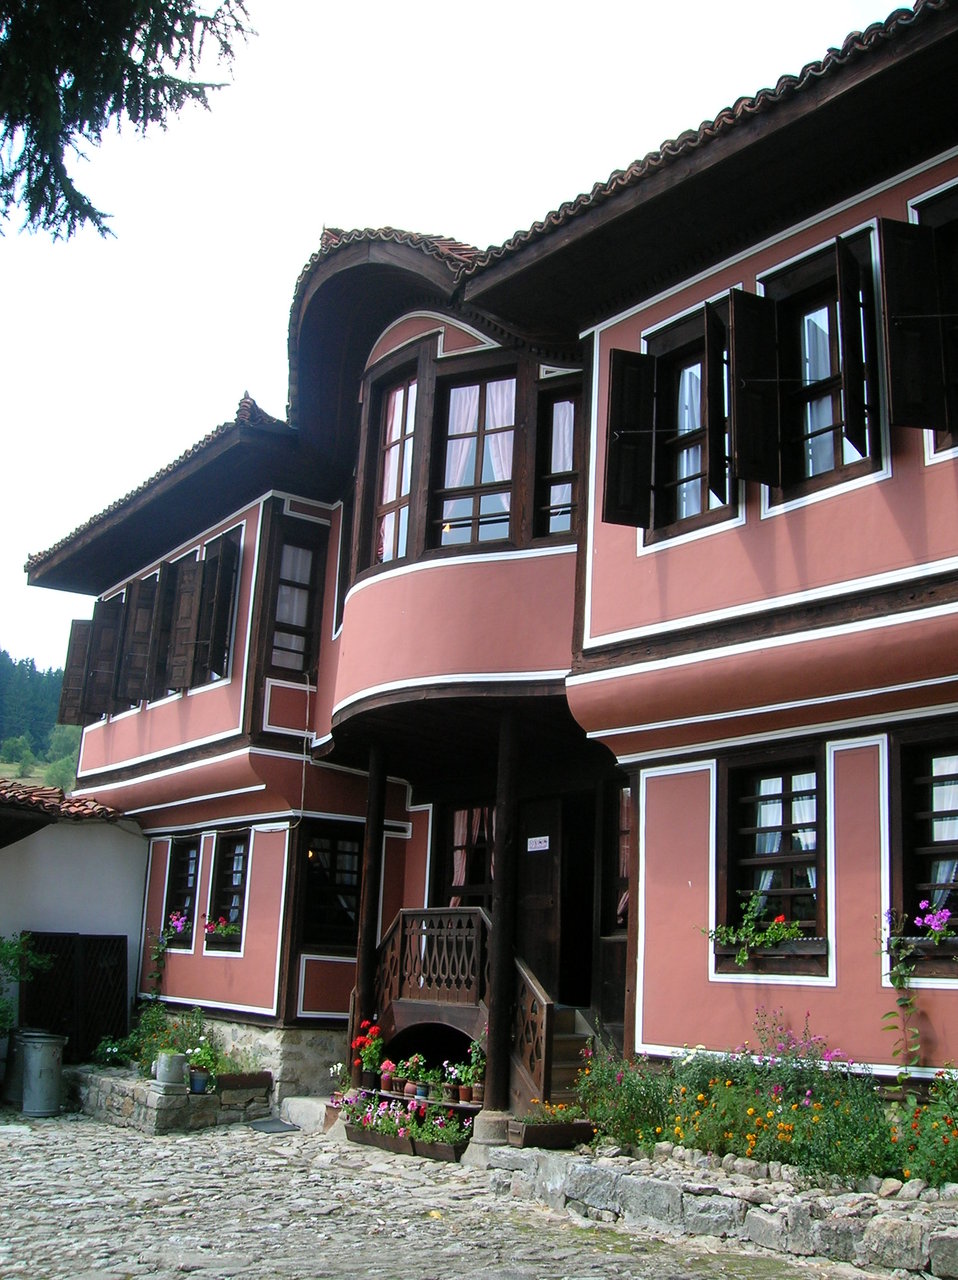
Kableshkov House, in Koprivshtitsa (Bulgaria). Espa√±ol: Casa Kableshkov, en Koprivshtitsa (Bulgaria). Fran√ßais†: Maison Kableshkov, √† Koprivchtitsa (Bulgarie).